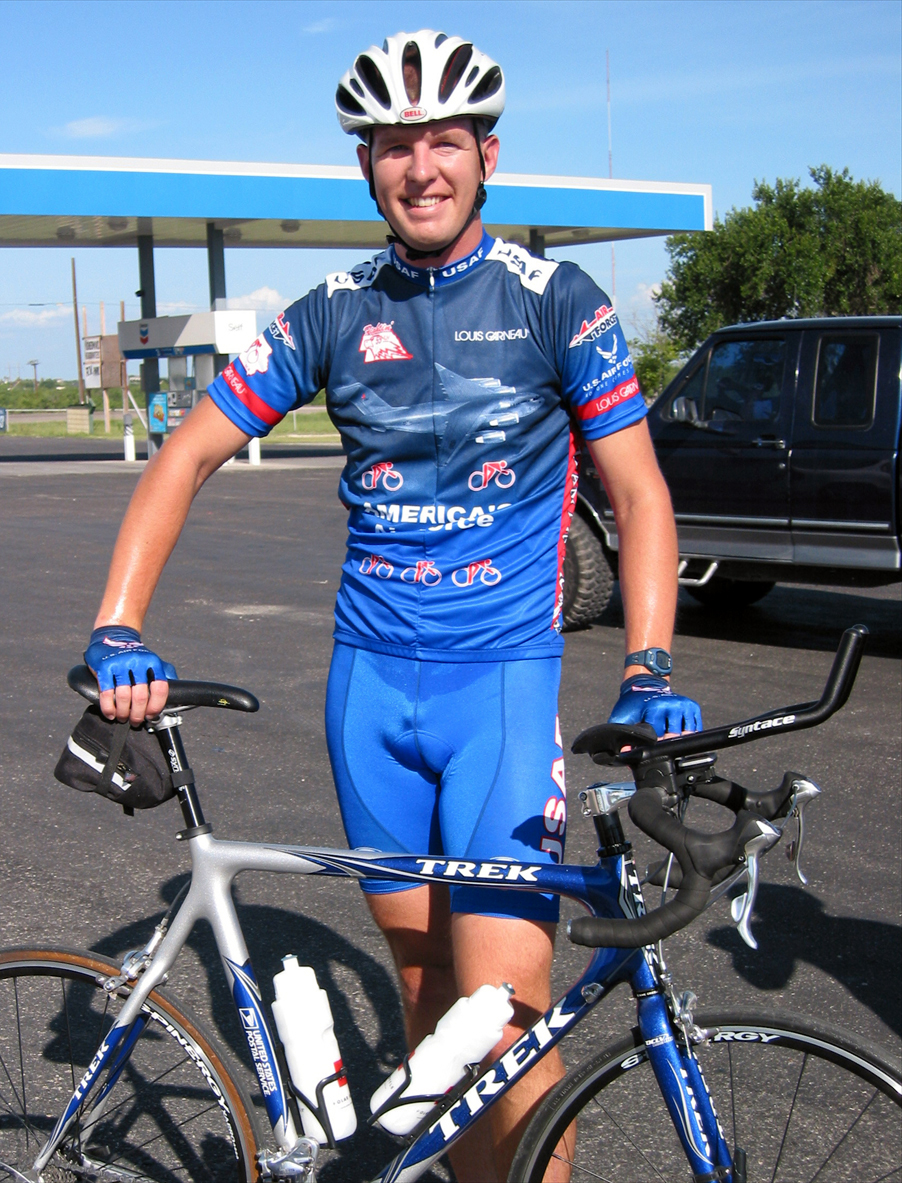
Stanley

LAUGHLIN AIR FORCE BASE, Texas -- Capt. Matt Stanley, a T-6 Texan II instructor pilot, is riding again after being struck by a car in July 2002. Stanley will participate in the 500-mile Register's Annual Great Bicycle Ride Across Iowa on July 20.